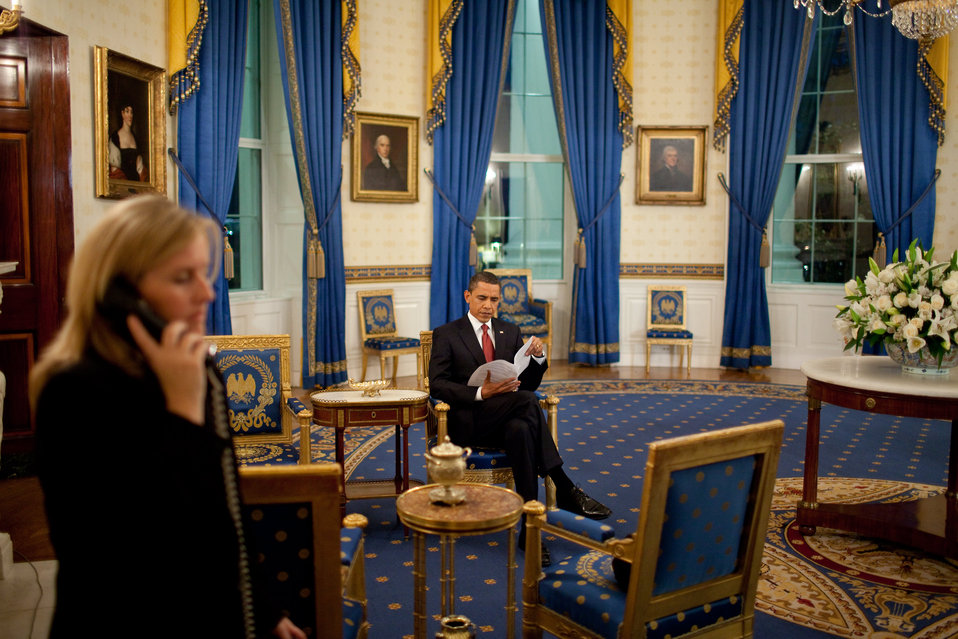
President Barack Obama reviews notes in the Blue Room prior to a Live Prime Time Press Conference in the East Room of the White House 3/24/09.